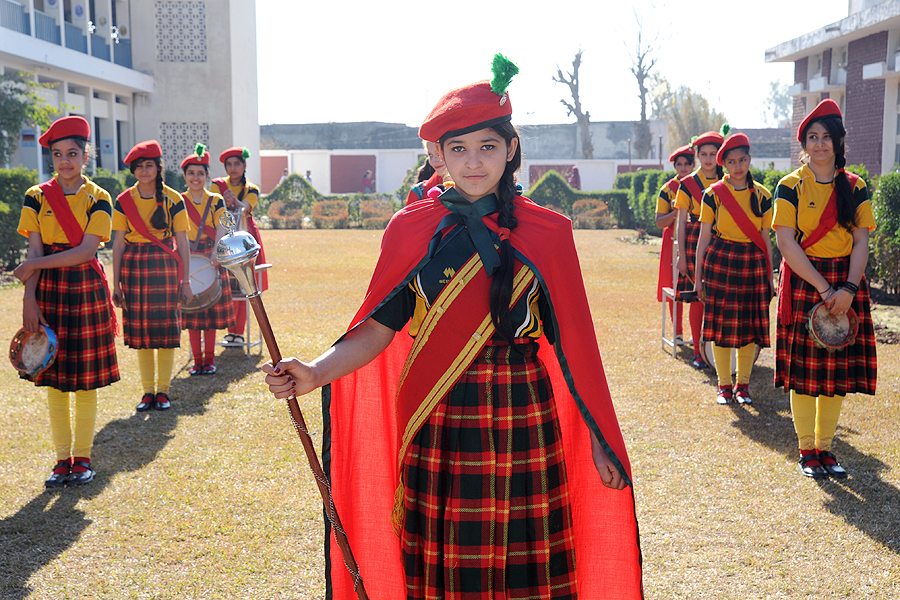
United States and Pakistan Launch the Pakistan Reading Project